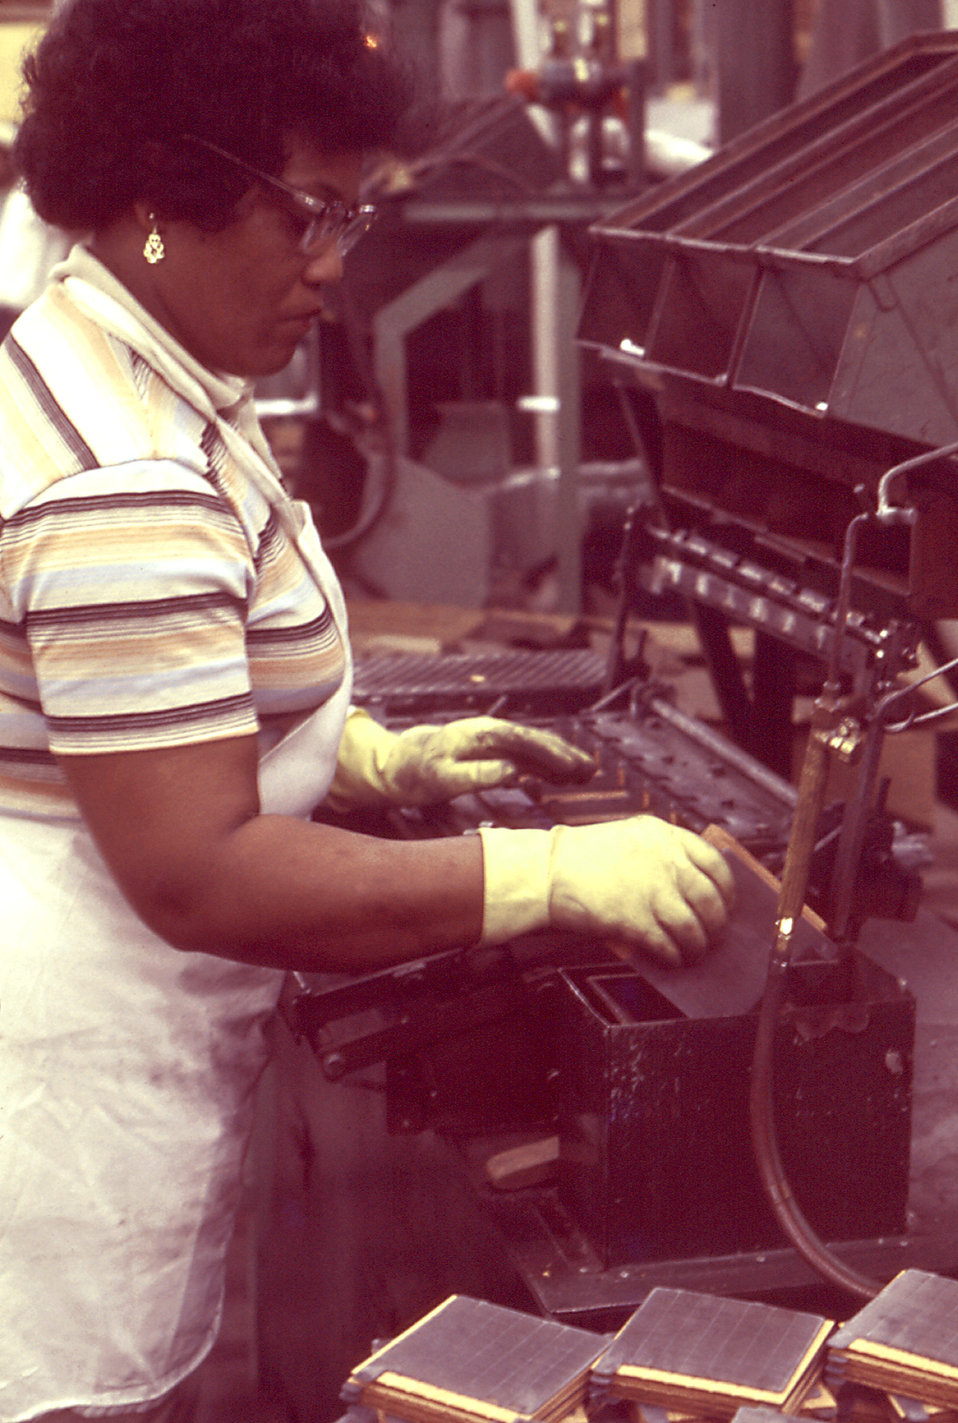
Excessive lead exposure was detected among 69% of 58 children whose mothers worked in a battery factory in Raleigh, NC.